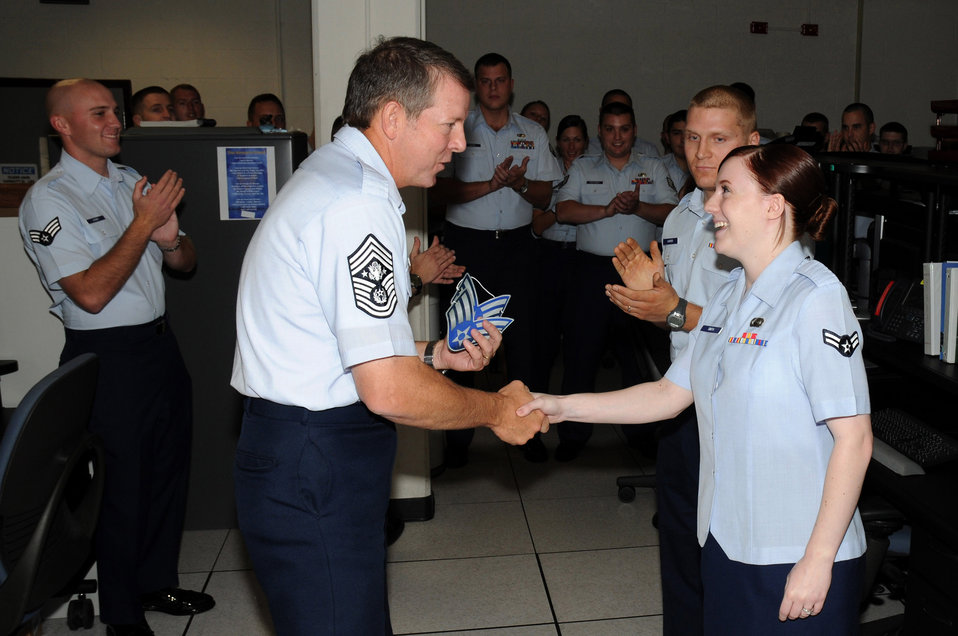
Straight from the chief

Chief Master Sergeant of the Air Force Rodney J. McKinley presents Airman 1st Class Lindsay Smith with a set of senior airman stripes during his visit to the National Air and Space Intelligence Center Sept. 8 at Wright-Patterson Air Force Base, Ohio. Airman Smith was awarded her stripes as a below-the-zone selectee. During his visit, the chief visited with enlisted, officer and civilian employees and answered questions from Airmen. He is the 15th chief master sergeant of the Air Force.